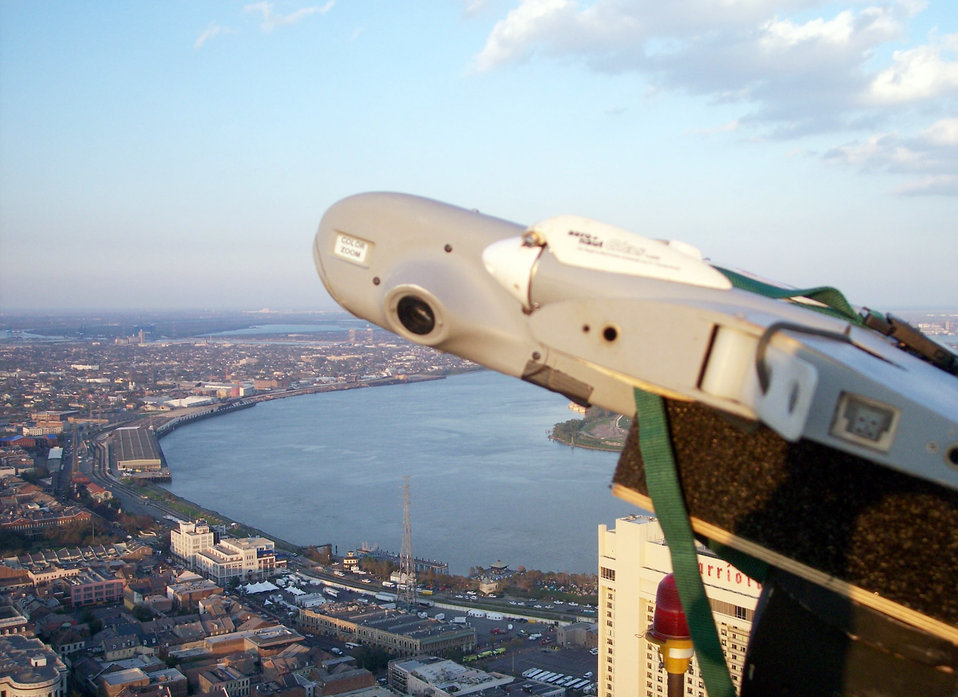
ROVERs aid in search and rescue

NEW ORLEANS -- An unmanned aerial vehicle, mounted on a pole, uses its remote operations video enhanced receiver, or ROVER, to help find survivors of Hurricane Katrina here and support relief efforts.